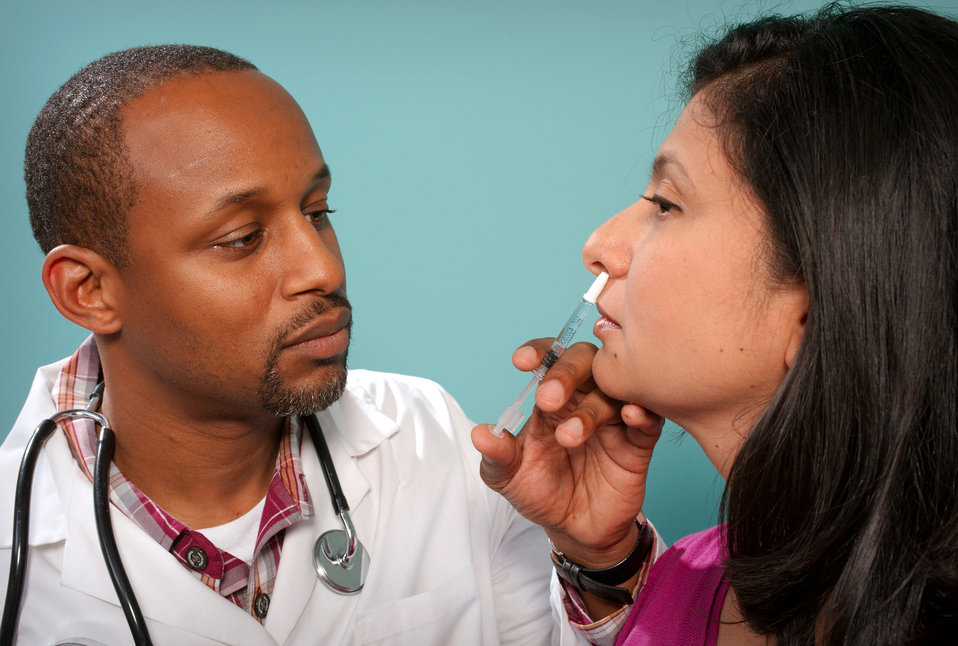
This 2009 image depicts a healthcare practitioner as he was administering the H1N1 live attenuated intranasal vaccine (LAIV) to a female recipient. Using a small syringe, he was delivering the vaccine mist into the woman's left nostril.